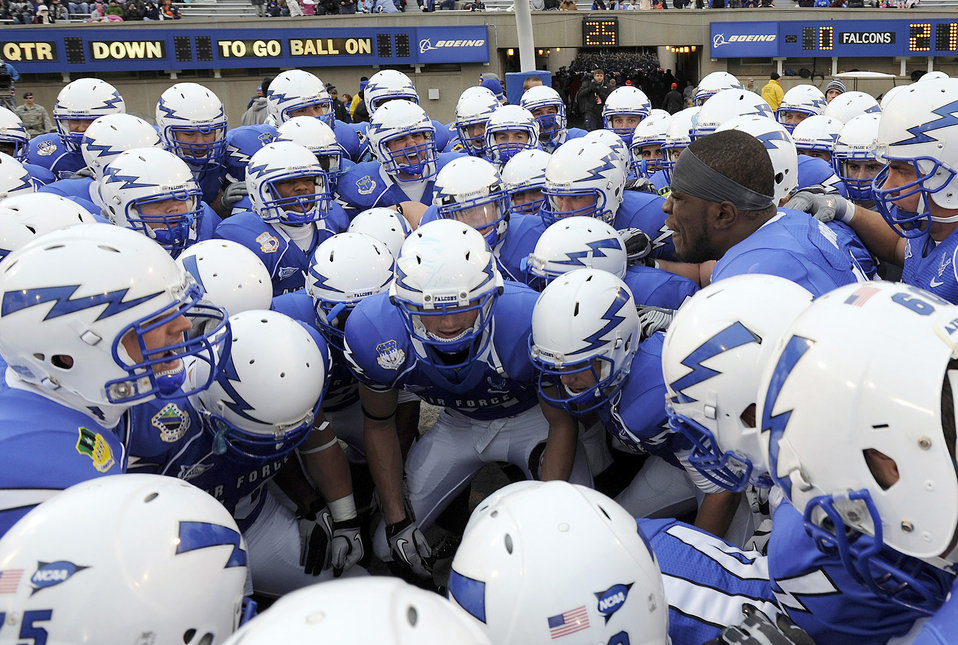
Let's huddle

Senior defensive back Reggie Rembert leads the Air Force Falcons in a huddle before the start of the last home game of the season against New Mexico Nov. 13, 2010, at Falcon Stadium in Colorado Springs, Colo. The Falcons will play Georgia Tech in the 2010 AdvoCare V100 Independence Bowl Dec. 27.